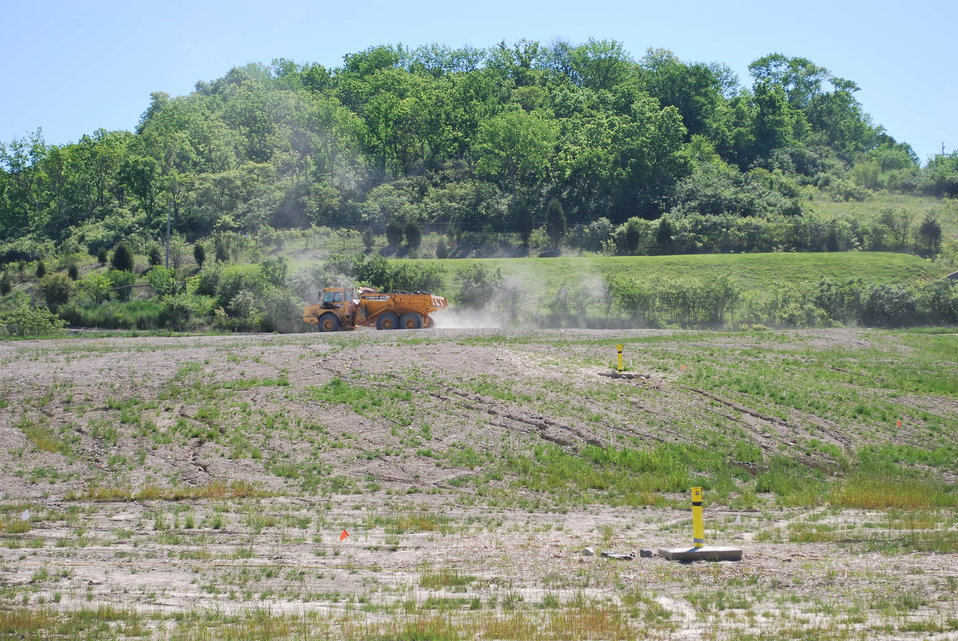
Recovery Act Project Brings End to Mound Site Cleanup Activities

The Recovery Act invested $17.9 million in the completion of EM’s legacy cleanup activities at the Mound Site in 2010.
Recovery Act workers disposed nearly 20,000 cubic meters of soil and demolition debris in the cleanup, which focused on the Operable Unit-1, a former mixed-waste landfill at the 306-acre site. The Recovery Act cleanup was the final remediation project at Mound.
The federal government is in the process of transferring ownership of the site to the Mound Development Corporation, a community reuse organization.